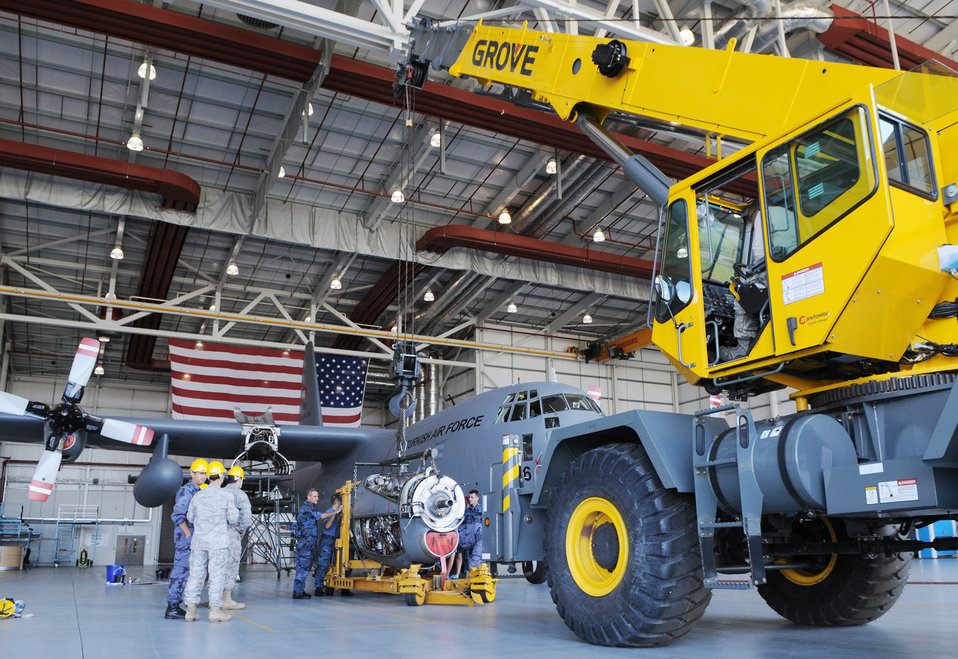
Mildenhall serves as base for Turkish C-130 engine replacement

Turkish air force maintainers work with U.S. Air Force Airmen to remove a damaged engine from a Turkish C-130 Aug. 17 at Royal Air Force Mildenhall, England. Airmen from the 100th Maintenance Squadron lent their facilities and equipment to the maintainers, who were flown in from Turkey after a post-flight inspection revealed problems with the engine, temporarily grounding it.